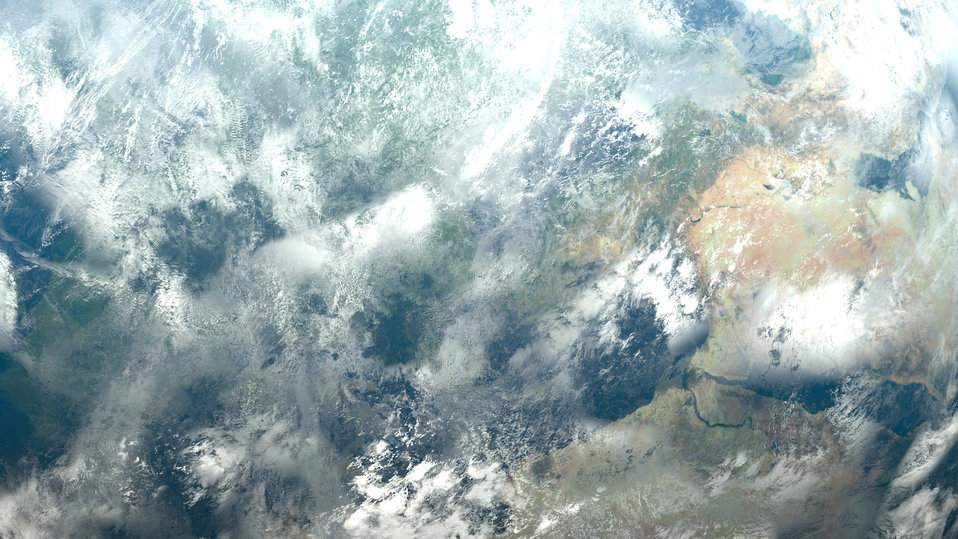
Zoom to the earth clouds

Closer to the earth's atmosphere and clouds from space.